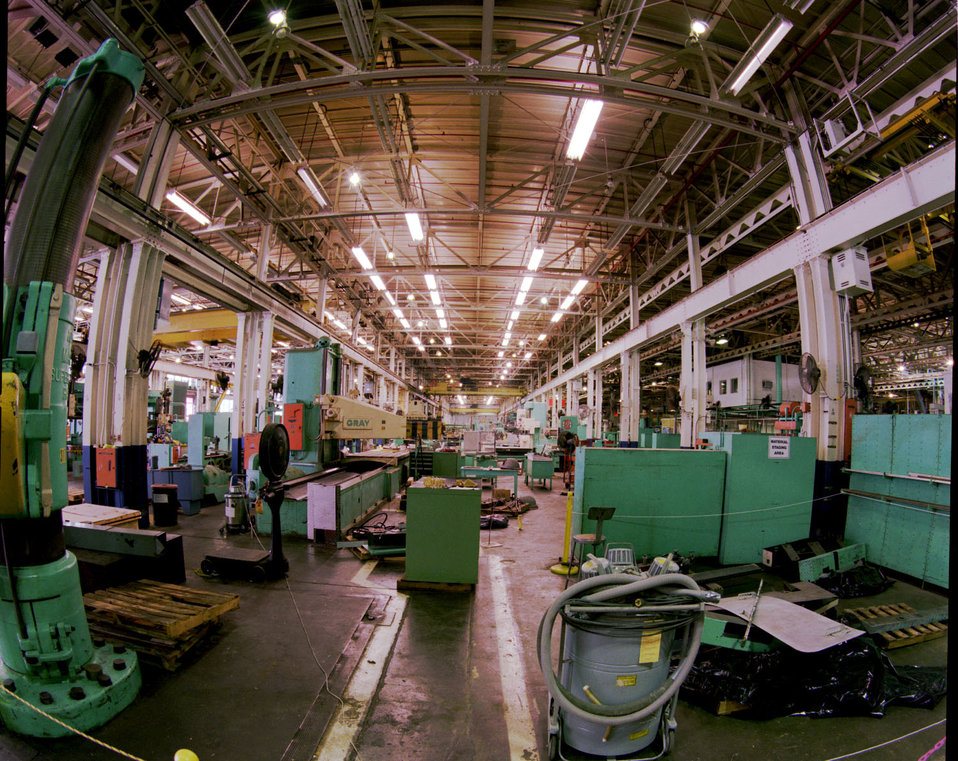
ETTP Reindustrialization Oak Ridge

98-168-3 DOE photo by Lynn Freeny

ETTP Reindustrialization Oak Ridge Tennessee 5-19-1998